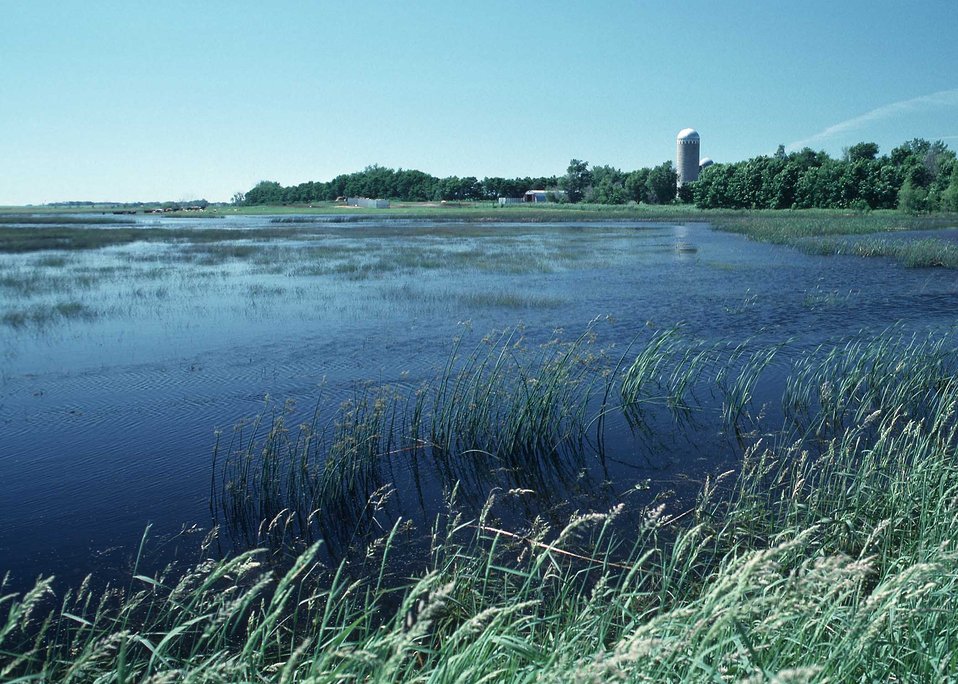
Prarie potholes provide an abundance of vital habitat for wildlife.